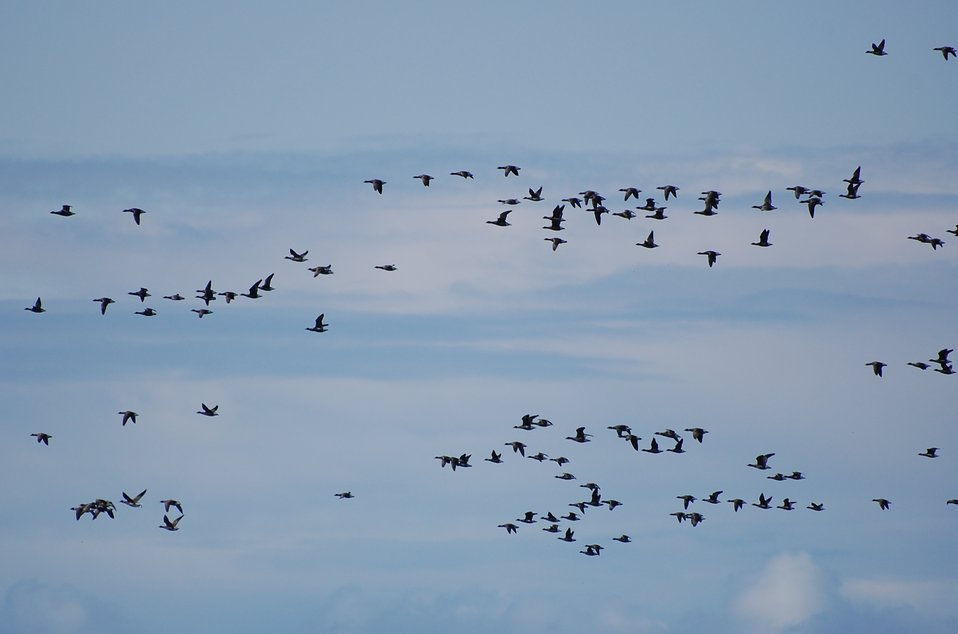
Brant at Izembek Lagoon

Izembek National Wildlife Refuge